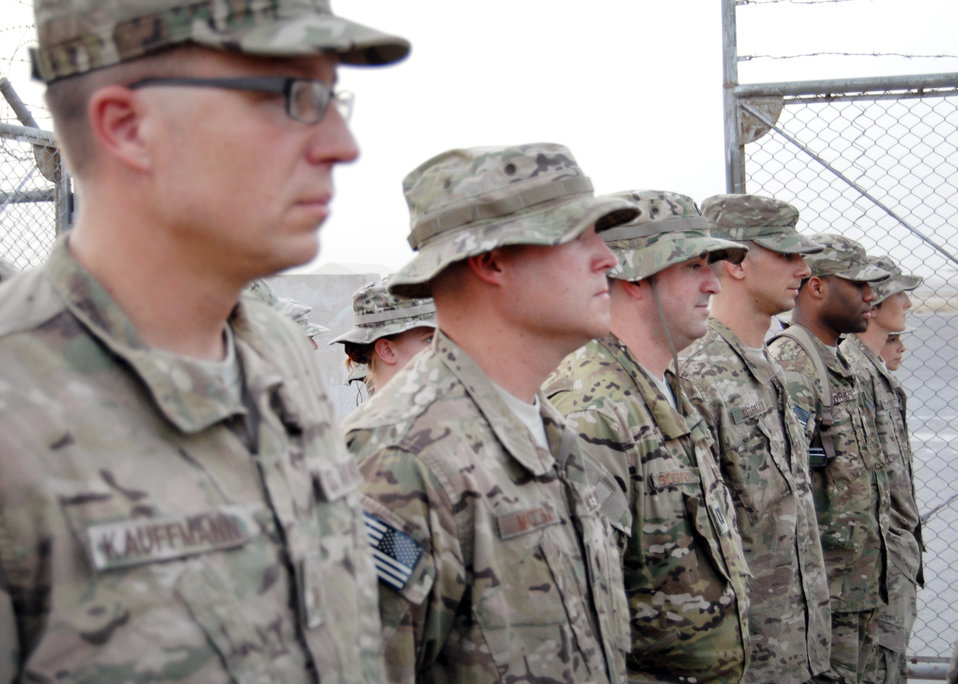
Raise the Flag

Airmen from the 651st Expeditionary Aeromedical Evacuation Squadron form up prior to the retreat ceremony at Kandahar Airfield, Afghanistan, Aug. 4, 2012.